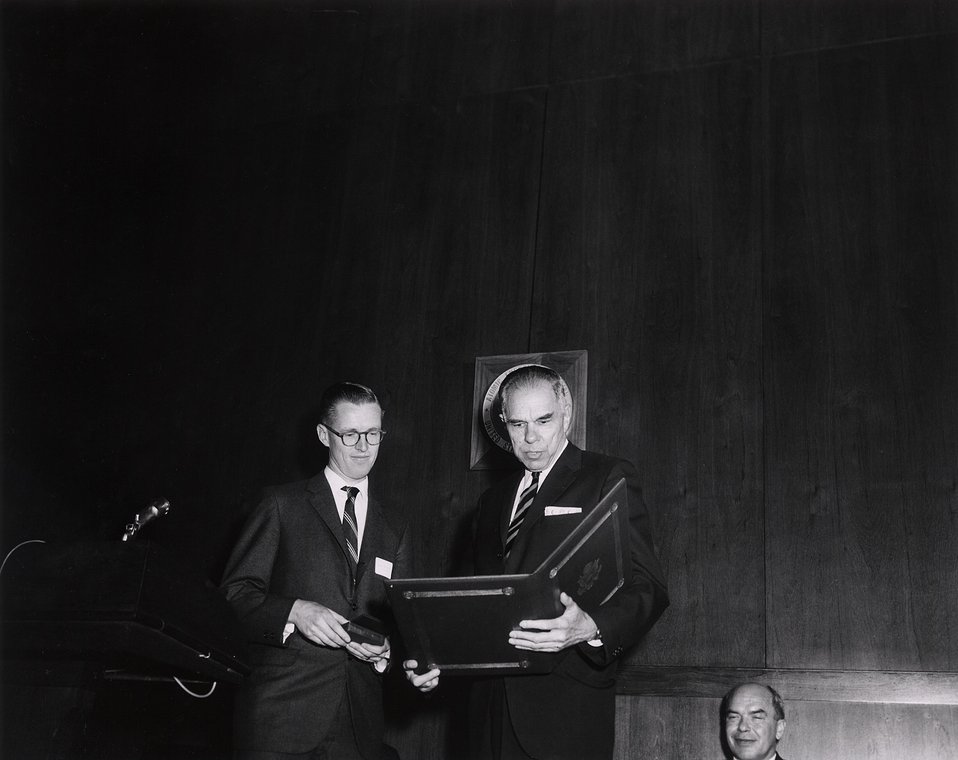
E.O. Lawrence Awards, 1967. Carnegie Institution Auditorium. April 27, 1967. L- Dr. John O. Rasmussen. R- Chairman Seaborg.